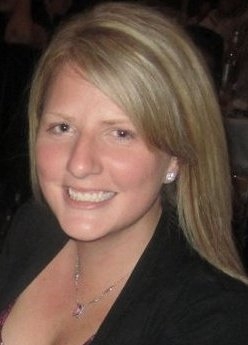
Kelly Lockman

FWS Wilderness Fellow Kelly Lockman